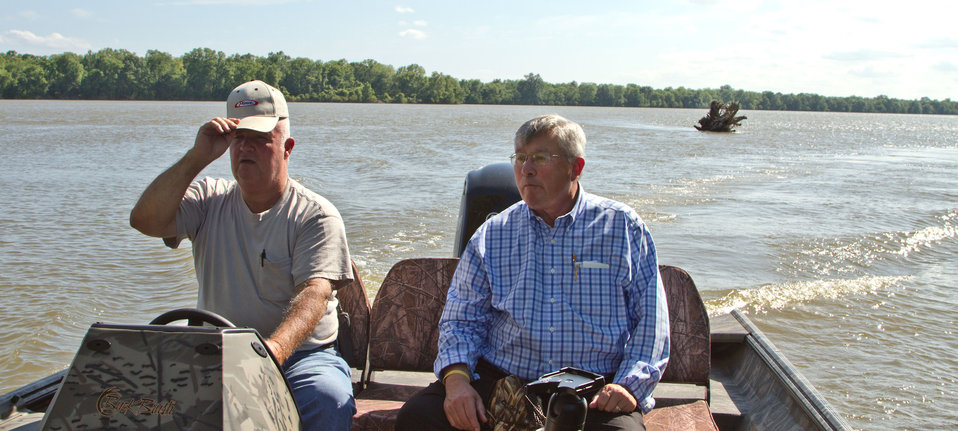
A tree stump floated to the middle of a farm field before being grounded when waters receded in Lauderdale County, where Mayor Rod Schuh (long sleeve blue shirt) and Disaster Management Director Jim Jarrett use a motorboat to survey the river flood and impact on the people and property of this county in Tennessee, on Saturday, May 21, 2011. To reclaim the farm field, the stump must be removed and the soil evaluated as the water recedes. The Mississippi and two other rivers border Lauderdale County on three sides. Today’s task was to look at as many of the approximately 300 homes in the river basin as possible.